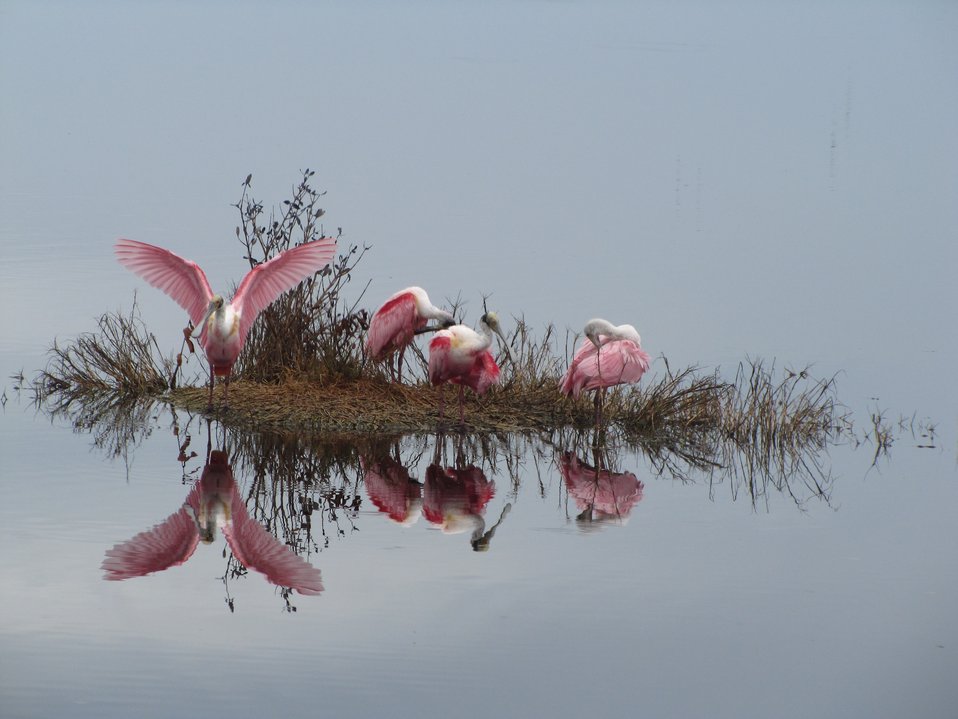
roseate spoonbills

Merritt Island National Wildlife Refuge, FL
Photo: courtesy of Jonathan Milak